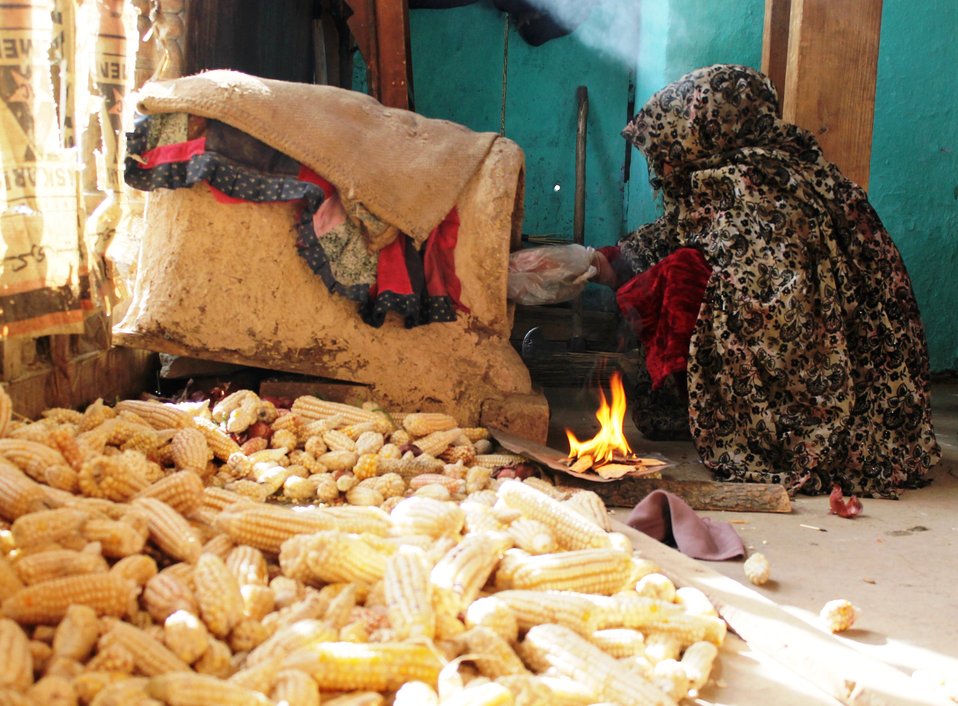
Honey Value Chain Development Initiative under the USAID's Entrepreneurs Project

Swat, October 17, 2012: USAID's Entrepreneurs Project is building capacities of 1200 female beekeepers in managing traditional mud hives to increase their incomes.